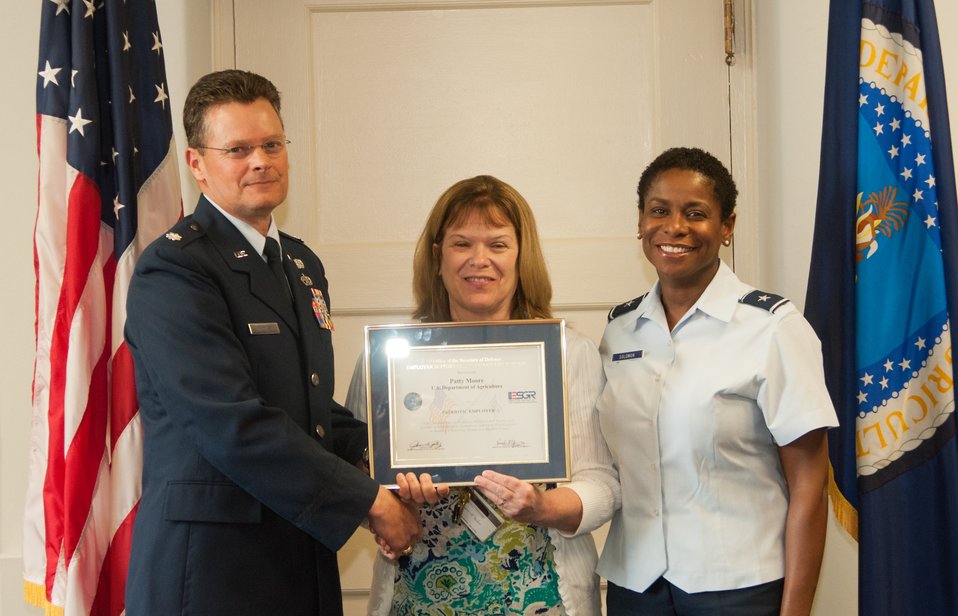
U.S. Department of Agriculture (USDA) Office of Human Resources Management (OHRM) Patty Moore was receives the Patriotic Employer Award for her service to Lieutenant Colonel Thomas during his deployment to Djibouti, Africa. Presentation was in Washington, DC, on Wednesday, May 15, 2013. (L to R Air National Guard Lieutenant Colonel and U.S. Department of Agriculture (USDA) Office of Human Resources Management (OHRM) Human Resource Specialist Mark Thomas, USDA OHRM Patty Moore, and Maryland National Assistant Adjutant General-Air Guard Brigadier General Allyson Solomon).